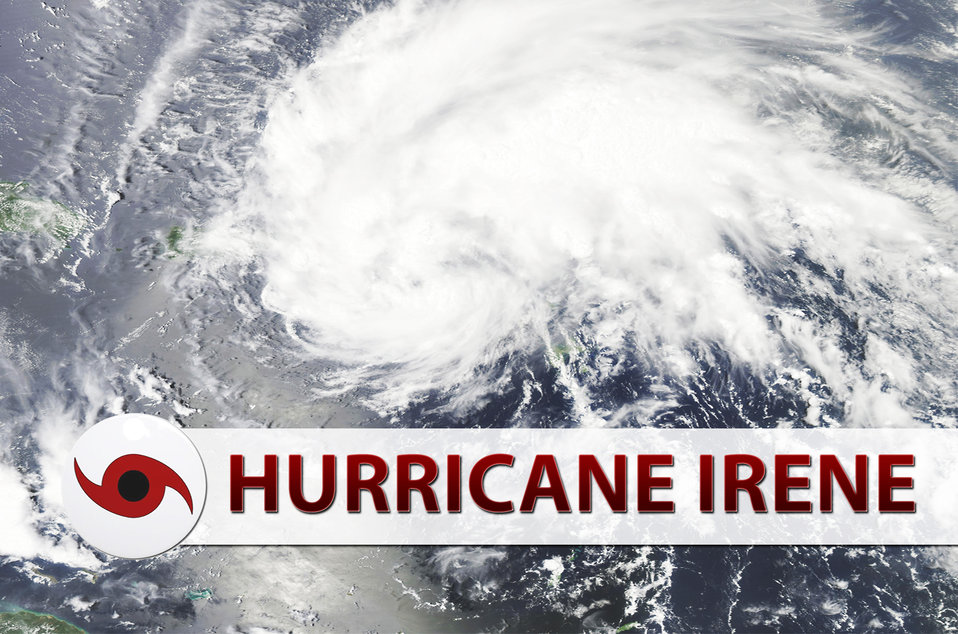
Hurricane Irene